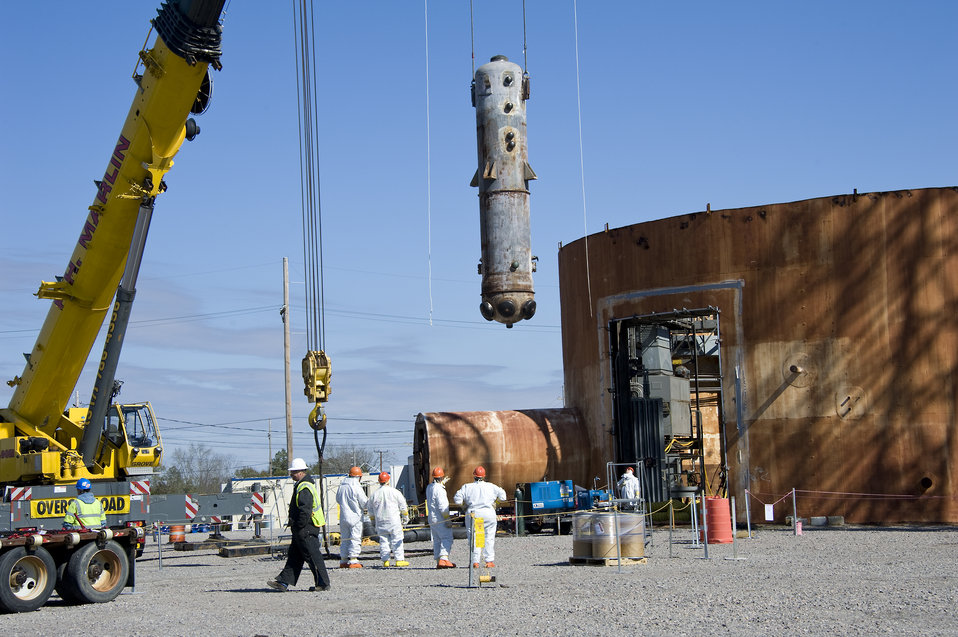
HWCTR steam generator

Work is under way to decommission the Heavy Water Components Test Reactor, which had been used to test experimental fuel assemblies for commercial heavy-water power reactors. SRS is scheduled to remove the dome of the reactor this month (January 2011). Workers also will displace the reactor vessel and steam generators, grout the remaining structure in place, and install a concrete cover over the reactor’s footprint.